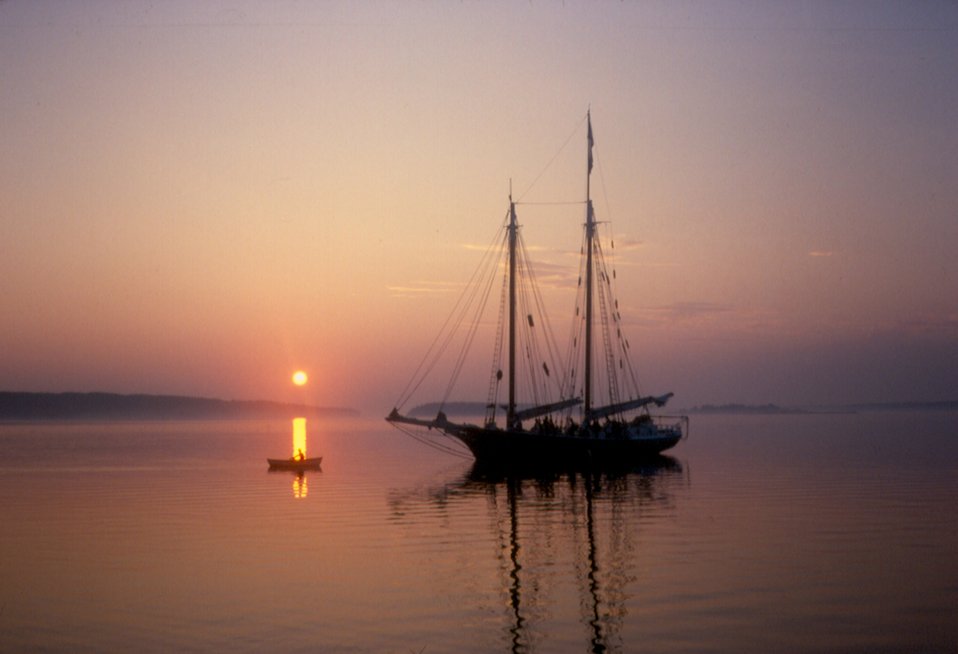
A Maine schooner at sunrise. Note rowboat illuminated by sunrise.